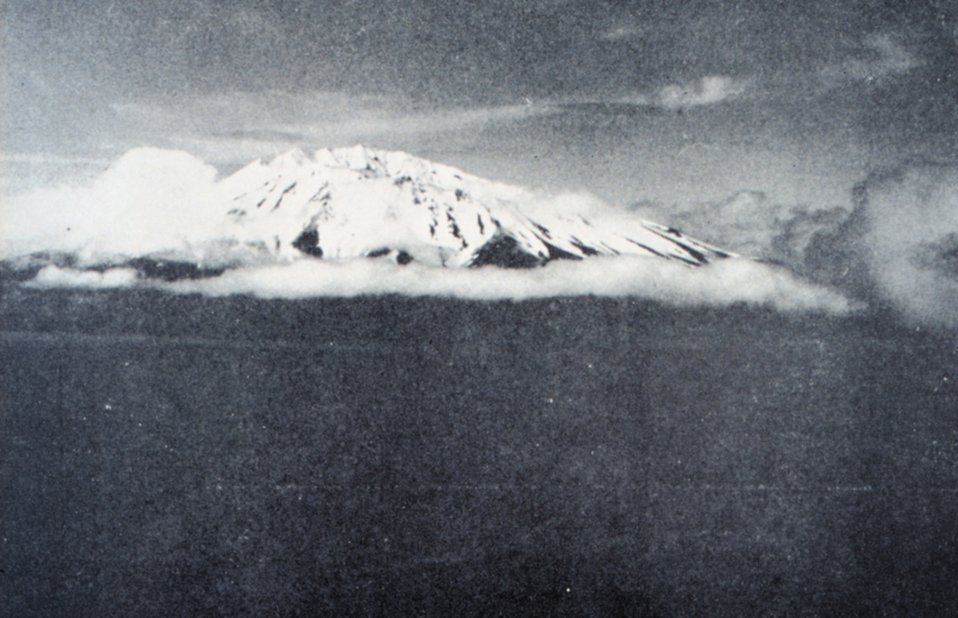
Herbert Island in the Four Mountains group of islands.